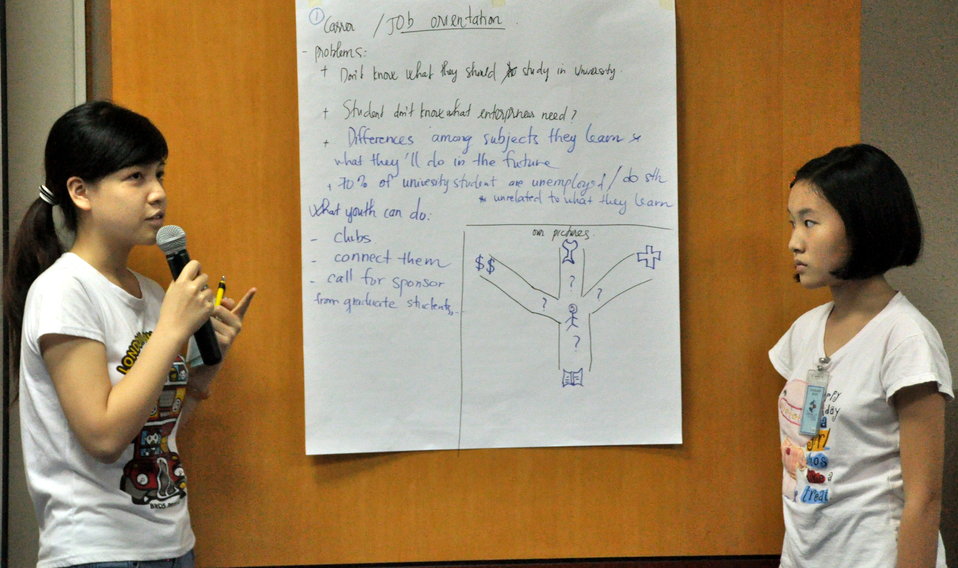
International Youth Day 2013: USAID hosts a lively discussion and group exercise on how youth can join in to advance development97

Hanoi, August 12, 2013.